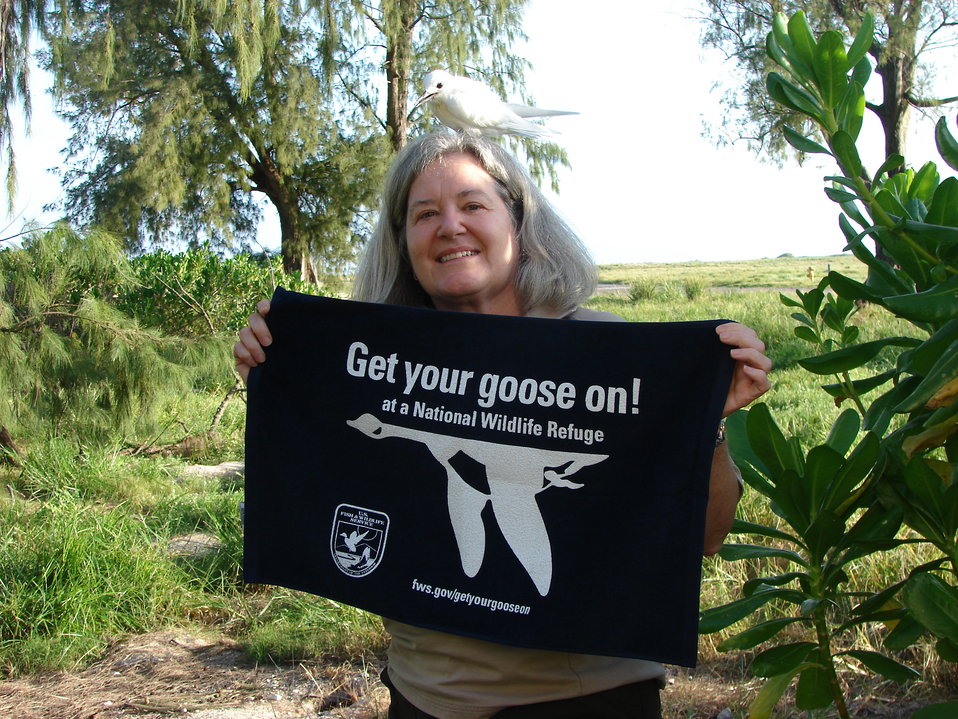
Get Your Goose On! - Pacific Atoll Style!

Midway Atoll National Wildlife Refuge staff take a break from feeding abandoned fledging white terns to Get Their Goose On!